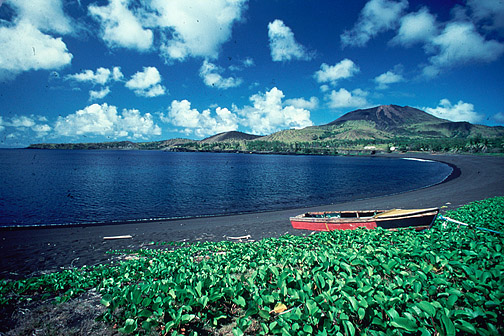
Black sand beach.